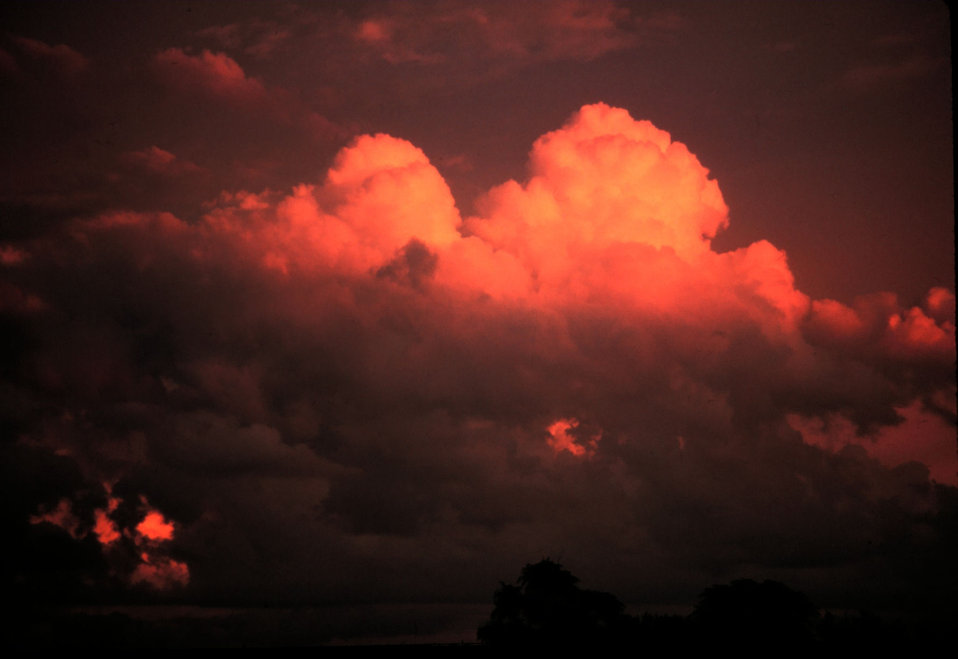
Large towering cumulus clouds